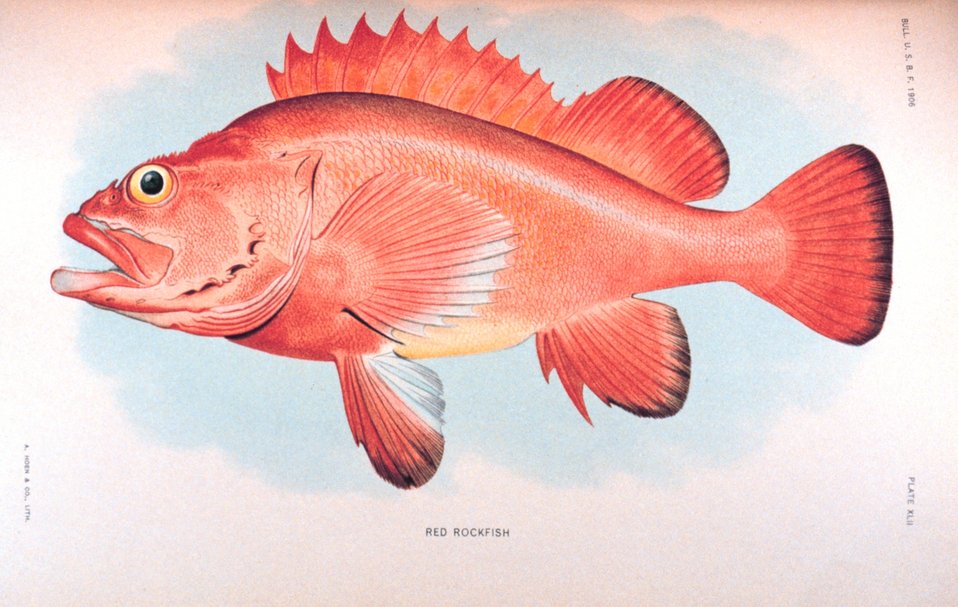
Red rockfish. In: 'The Fishes of Alaska.' Bulletin of the Bureau of Fisheries, Vol. XXVI, 1906. P. 360, Plate XLII.